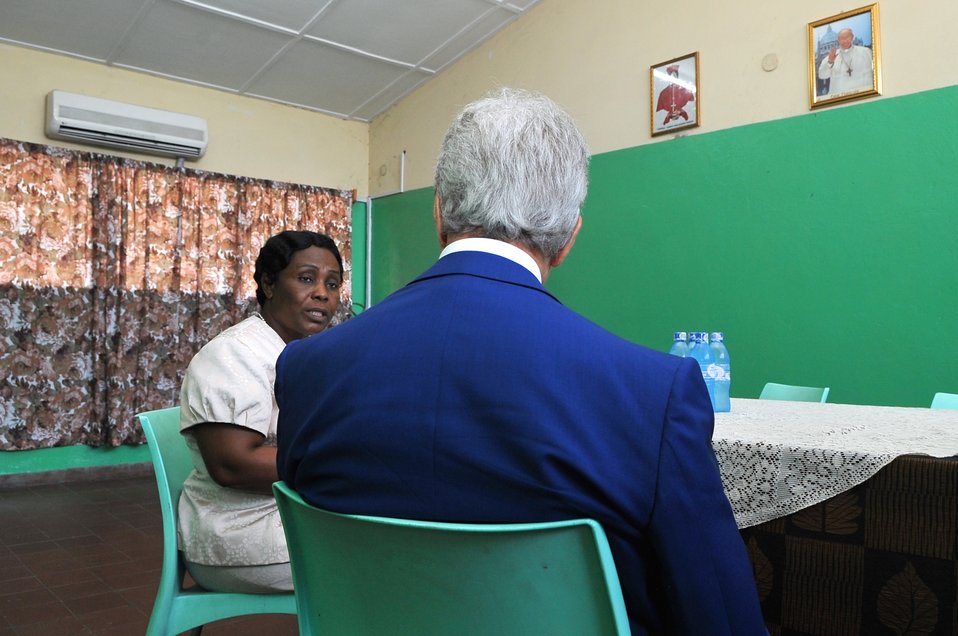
Secretary Kerry Meets With Gender-Based Violence Expert at Hospital in Kinshasa

U.S. Secretary of State John Kerry meets with Julienne Lusenge, a prominent gender-based violence opponent, while visiting St. Joseph's Hospital and touring its USAID-funded Fistula Clinic in Kinshasa, Democratic Republic of Congo, on May 4, 2014.